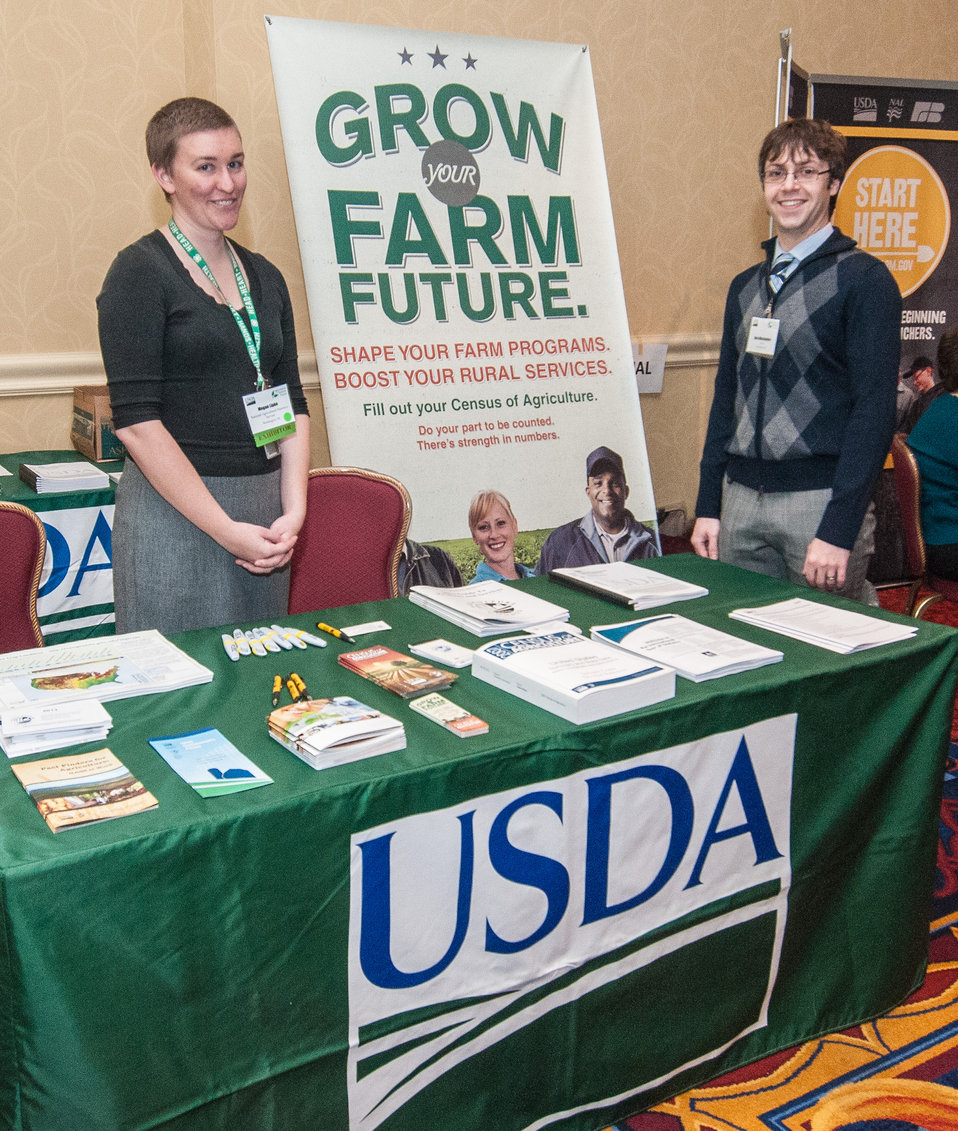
U.S. Department of Agriculture (USDA) National Agricultural Statistics Service’s (NASS) Megan Lipke, left, and Alex Minchenkov supporting the Census of Agriculture’s Grow your Farm Future theme table at the 2013 Agricultural Outlook Forum, held at the Crystal Gateway Marriott Hotel in Arlington, VA on Thursday, Feb. 21, 2013.